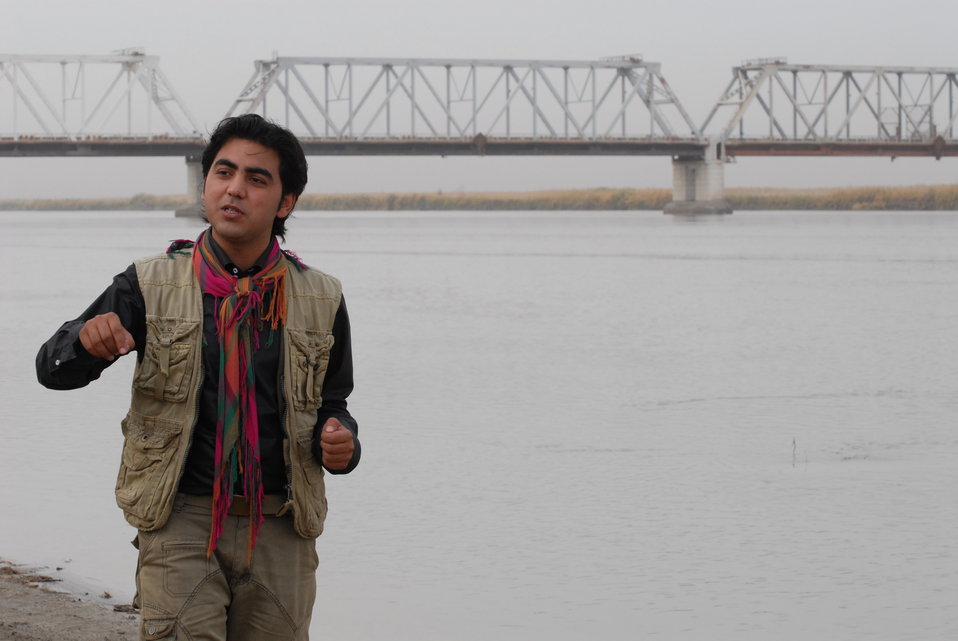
'On the Road' in Balkh Province